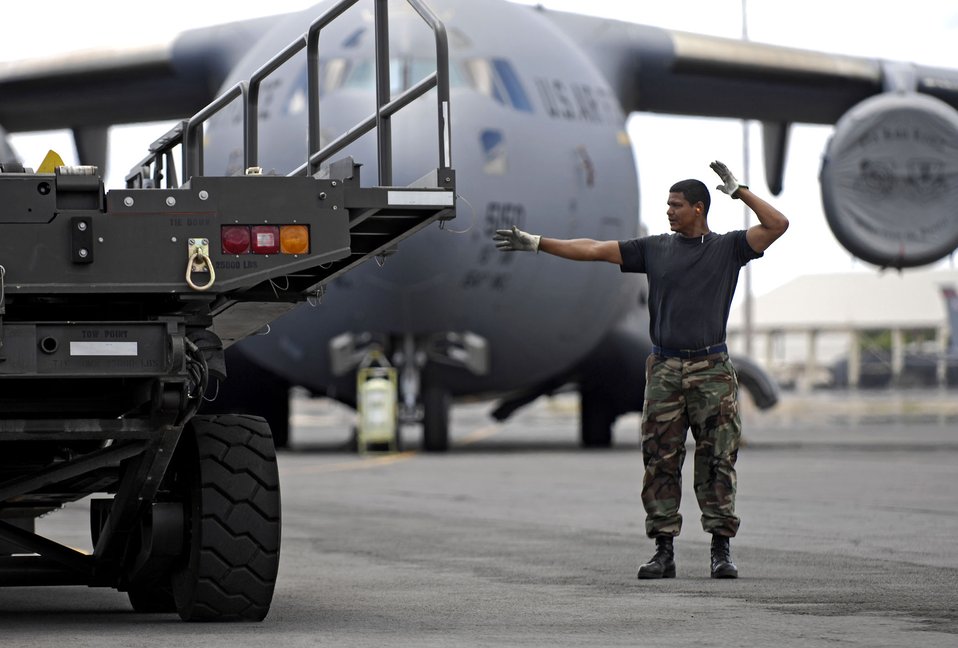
Hickam Rodeo team ready to go

Master Sgt. Greg Martinez guides a K-Loader off of a C-17 Globemaster III during a Rodeo practice July 13 at Hickam Air Force Base, Hawaii. The team is practicing for the upcoming Air Mobility Command Rodeo at McChord AFB, Wash. Sergeant Martinez is from the 15th Logistics Readiness Squadron, Combat Mobility Element and is part of Hickam's Rodeo team.